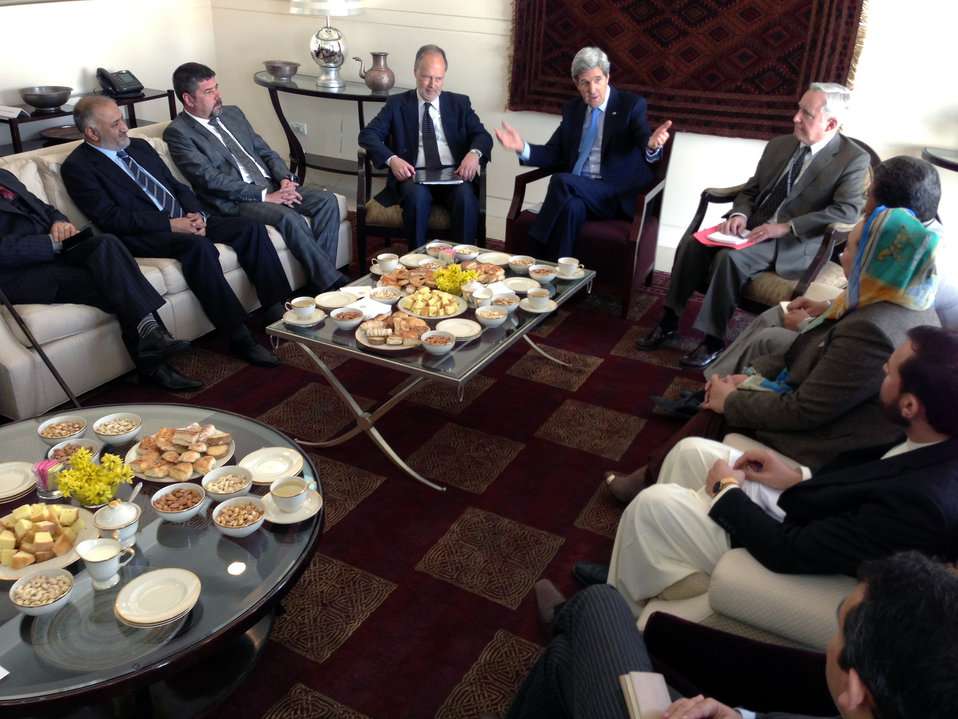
Secretary Kerry Participates in Afghan Elections Stakeholders Roundtable

U.S. Secretary of State John Kerry (center), U.S. Ambassador to Afghanistan James Cunningham (near left), and Senior Deputy Special Representative for Afghanistan and Pakistan David Pierce (near right) participate in a roundtable discussion with elections stakeholders in Kabul, Afghanistan on March 26, 2013.